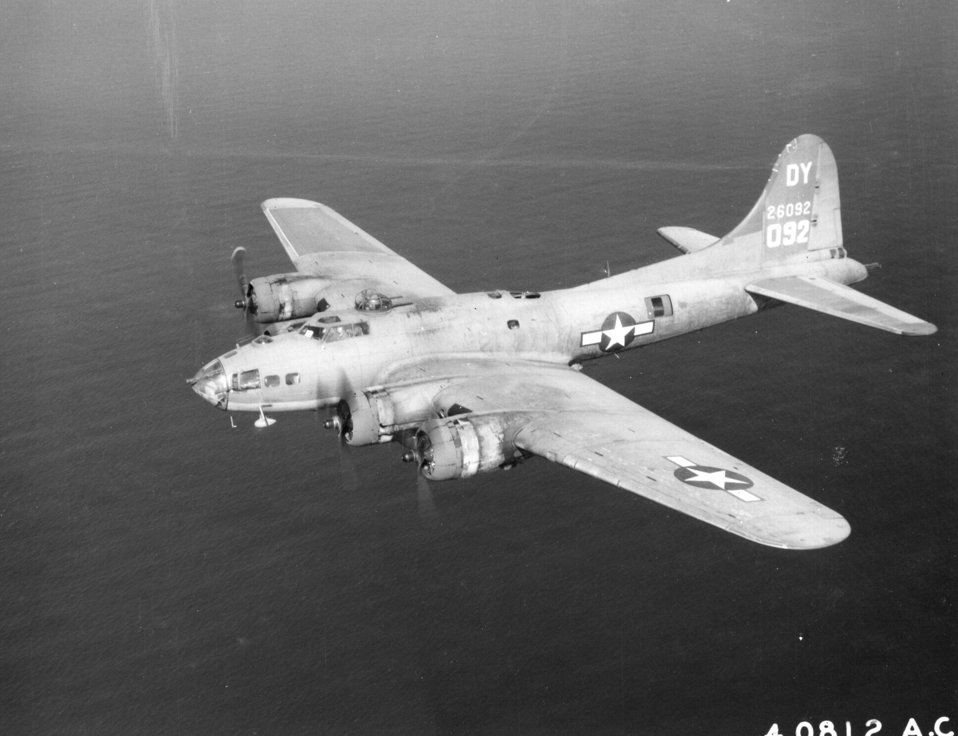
B-17 Flying Fortress